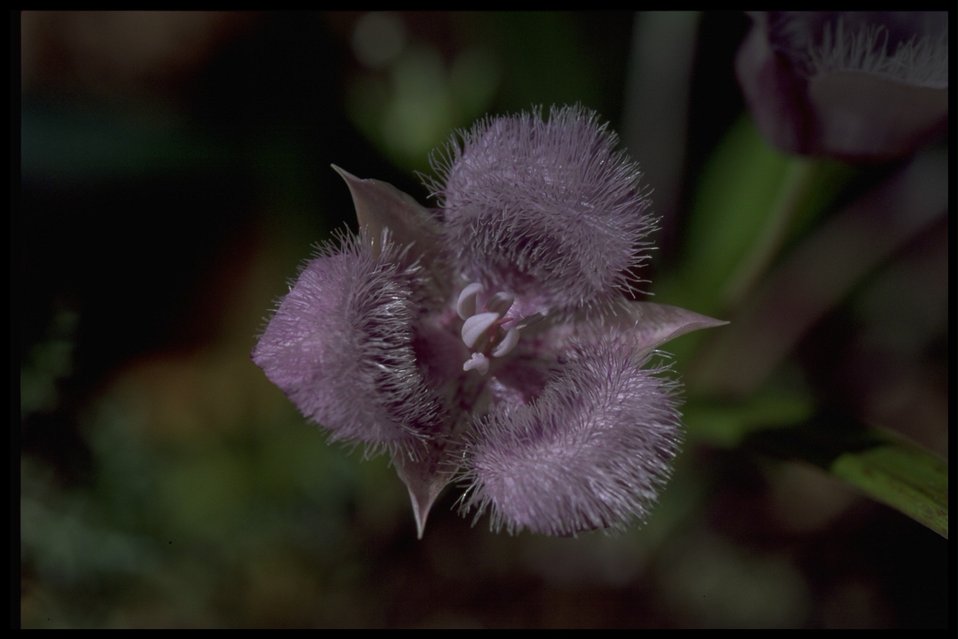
Closeup shot of Calochortus tolmiei.